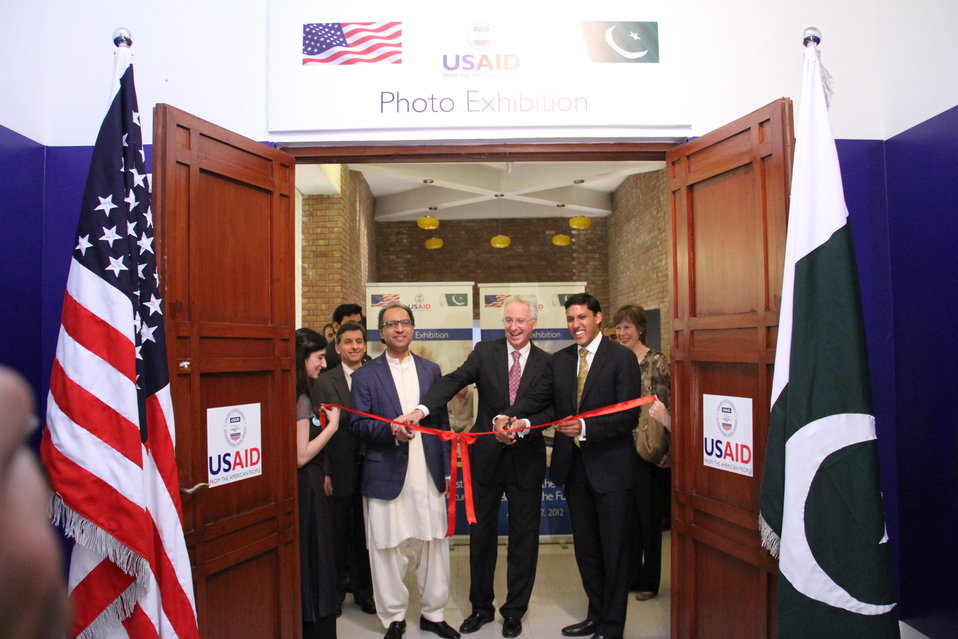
Photo Exhibition Celebrate US-PAK Cooperation at PNCA, Islamabad on April 13, 2012

Federal Minister for Finance Dr. Abdul Hafeez Sheikh, Dr. Rajiv Shah, Administrator of the USAID, and US Ambassador Cameron Munter inaugurating the photo exhibition celebrating more than six decades cooperation between the United Stated and Pakistan.